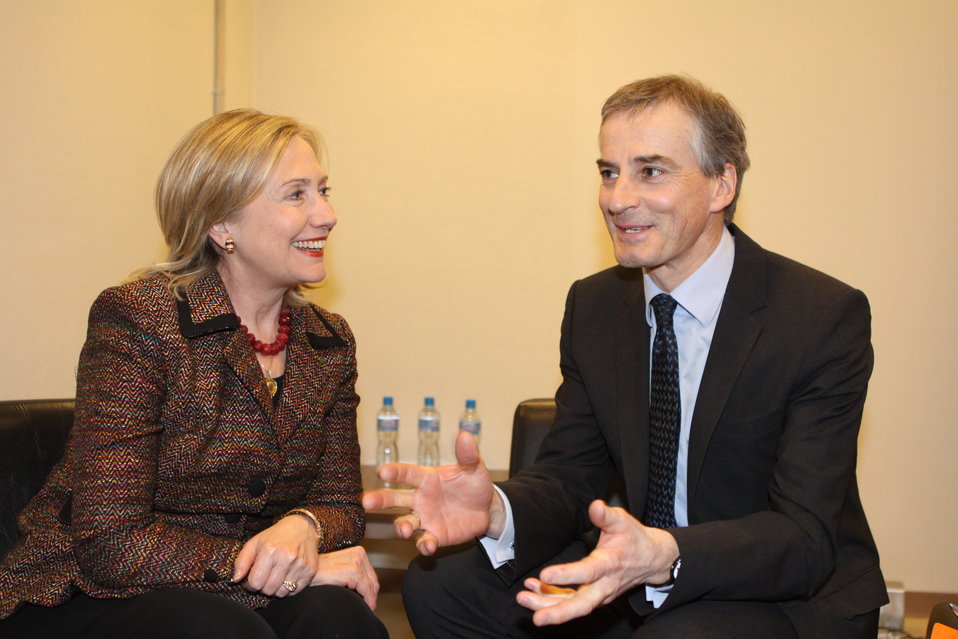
Secretary Clinton Meets With Norwegian Foreign Affairs Minister Støre

U.S. Secretary of State Hillary Rodham Clinton meets with Norwegian Foreign Affairs Minister Jonas Gahr Støre at United Nations Office at Geneva, Switzerland, on February 28, 2011. The meeting took place on the sidelines of the High Level Segment of the Human Rights Council which brought together many foreign ministers in Geneva.